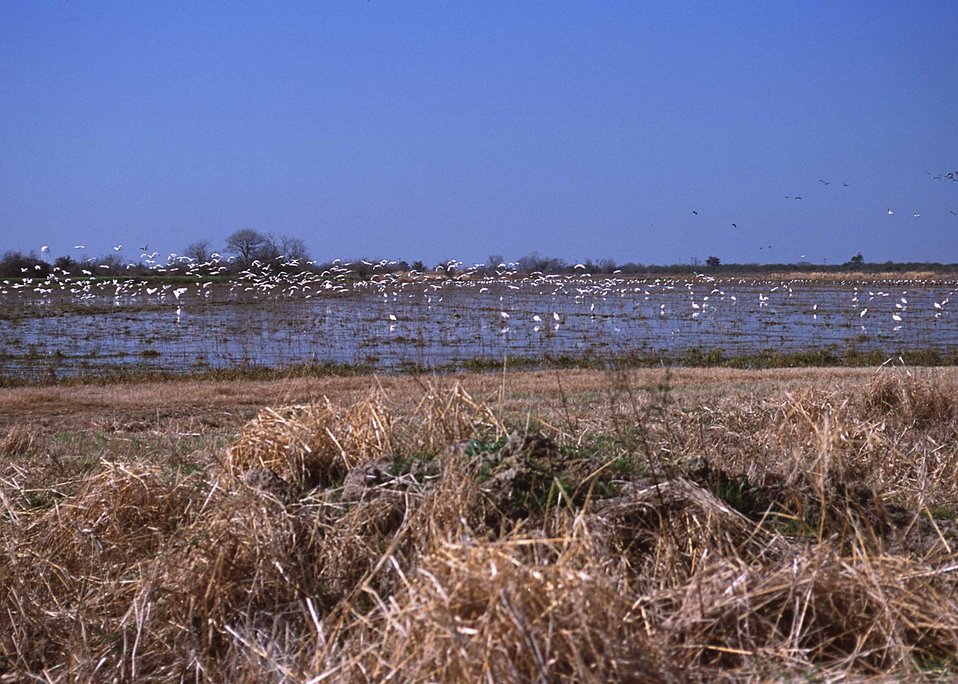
Flooded croplands near Gueydan, Louisiana attract thousands of geese in the winter.